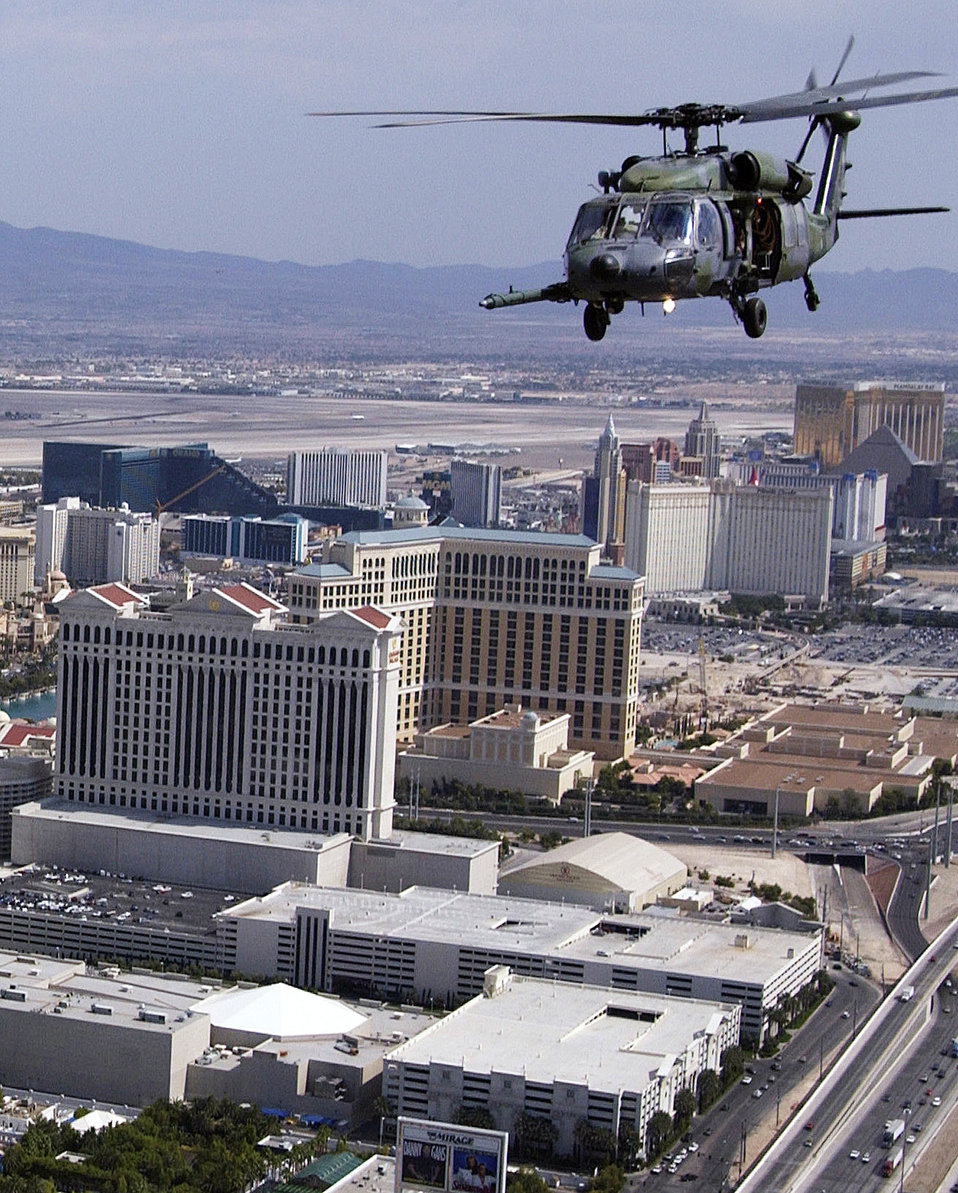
Scenic flight

OVER LAS VEGAS -- An HH-60 Pave Hawk from the 66th Rescue Squadron, Nellis Air Force Base, Nevada, flies past the Las Vegas Strip after completing a Combat Search and Rescue training mission. The 66th RQS is conducting CSAR exercises with the 510th Fighter Squadron, Aviano Air Base, Italy in preparation for the upcoming Red Flag.